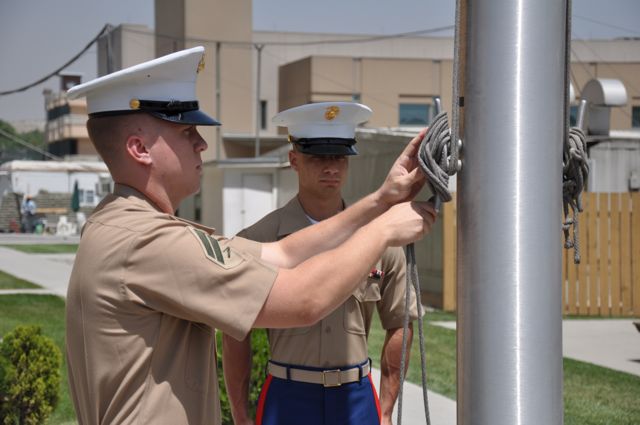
Memorial Day at US Embassy in Kabul